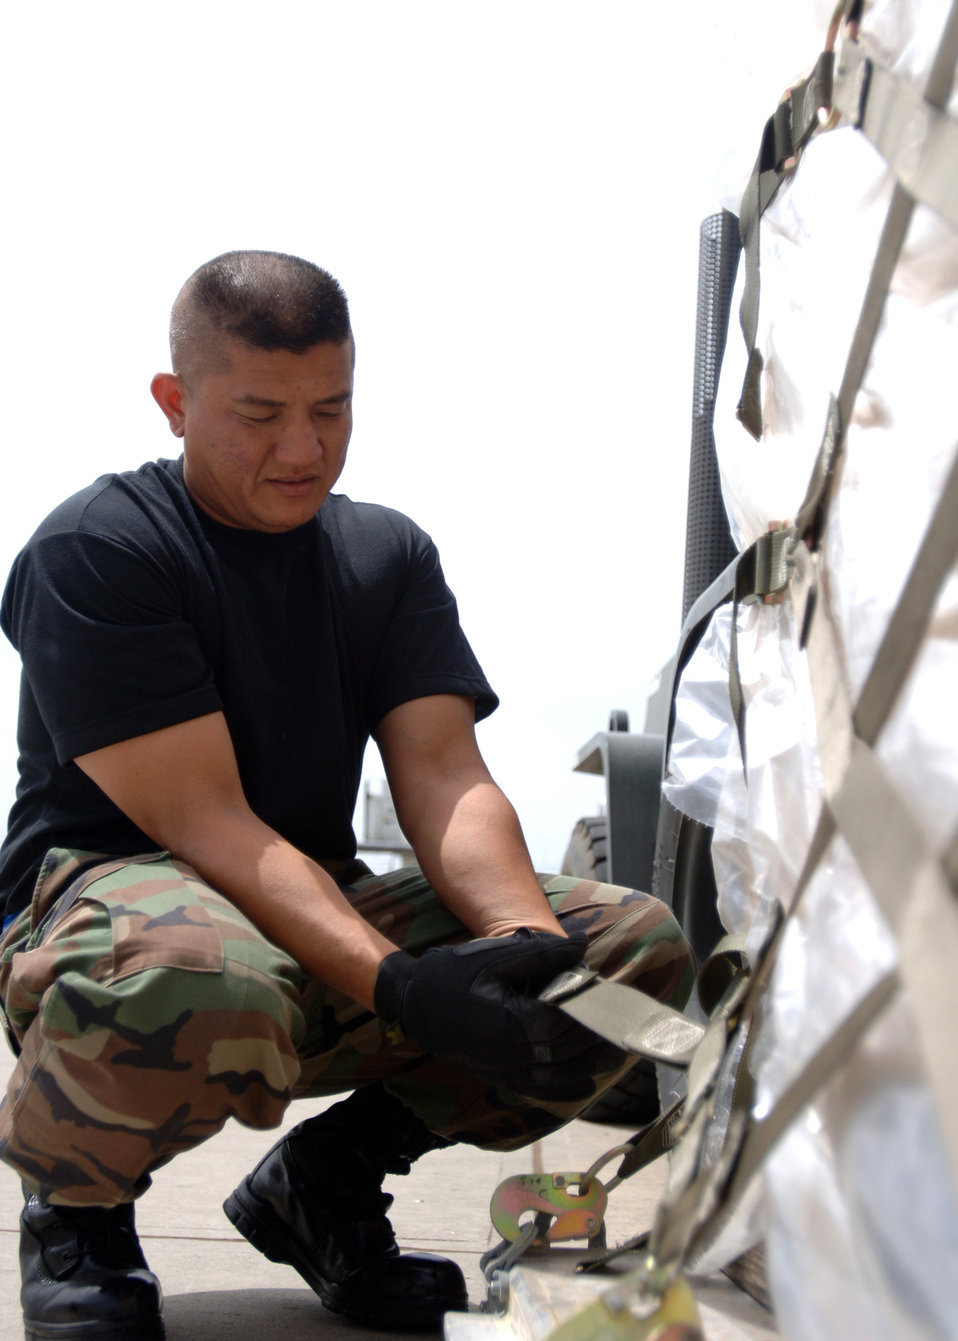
Guam reservists support cargo hub at Incirlik

Staff Sgt. Gerard Mendiola secures pallets ready for loading at Incirlik Air Base, Turkey, on Saturday, April 29, 2006. Sergeant Mendiola is a reservist from the 44th Aerial Port Squadron at Andersen Air Force Base, Guam, and is on a 120-day deployment at Incirlik.